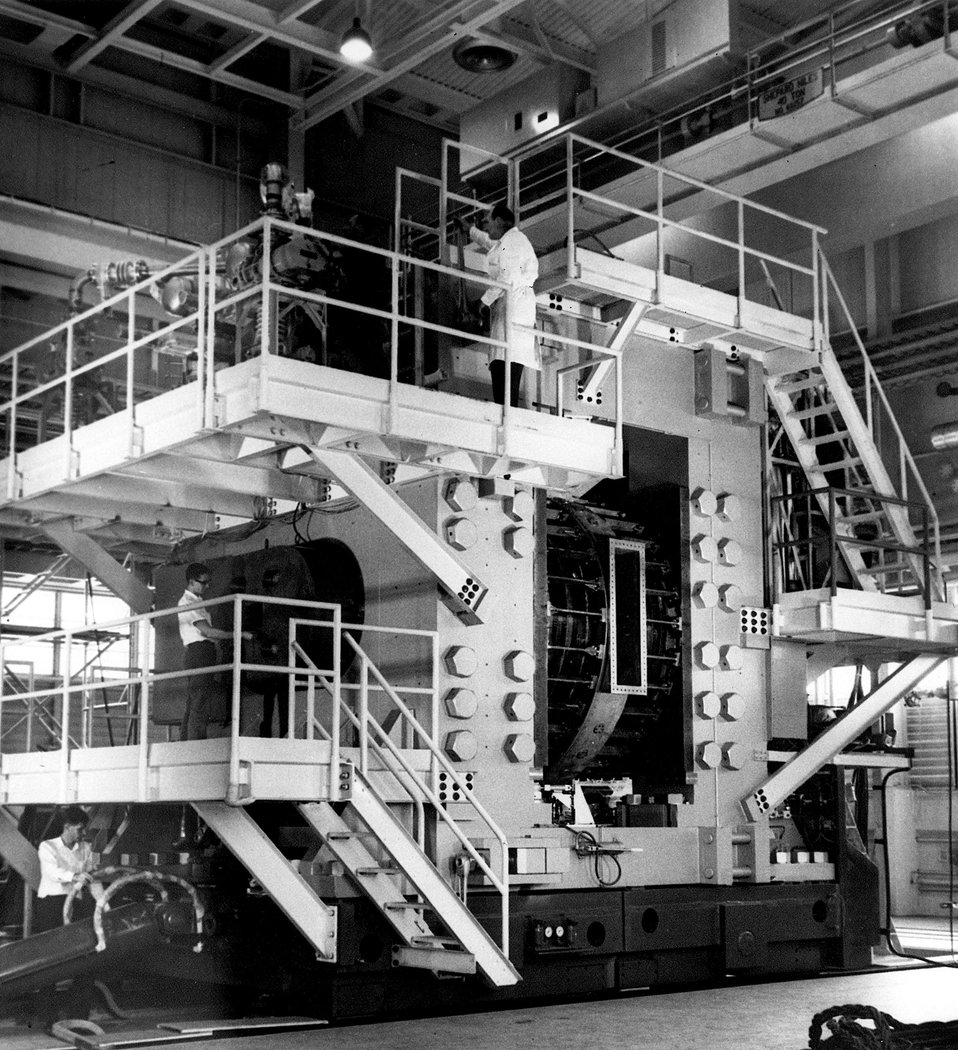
The 80-inch Bubble Chamber assembly, which is housed in a building contagious to the north side of the Alternating Gradient Synchrotron magnet ring. At the lower left side of the chamber is the hydraulic ram that serves to move the assembly along its track. Above the ram, on the first platform, is the aperture at which the light source and the photographic equipment is installed. On the second platform is the high vacuum pumping system, The vacuum chamber and coil can be seen in the large rectangular opening on the facing side of the magnet structure. At the far right of the assembly is the cryogenic equipment, and below it the console for the hydrolic system. c. 1963